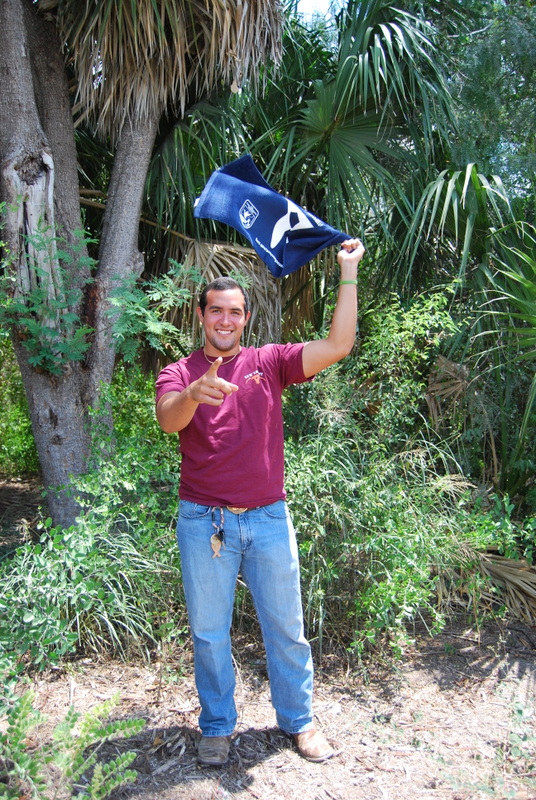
Get Your Goose On!

Photo taken at Santa Ana National Wildlife Refuge in southern Texas.